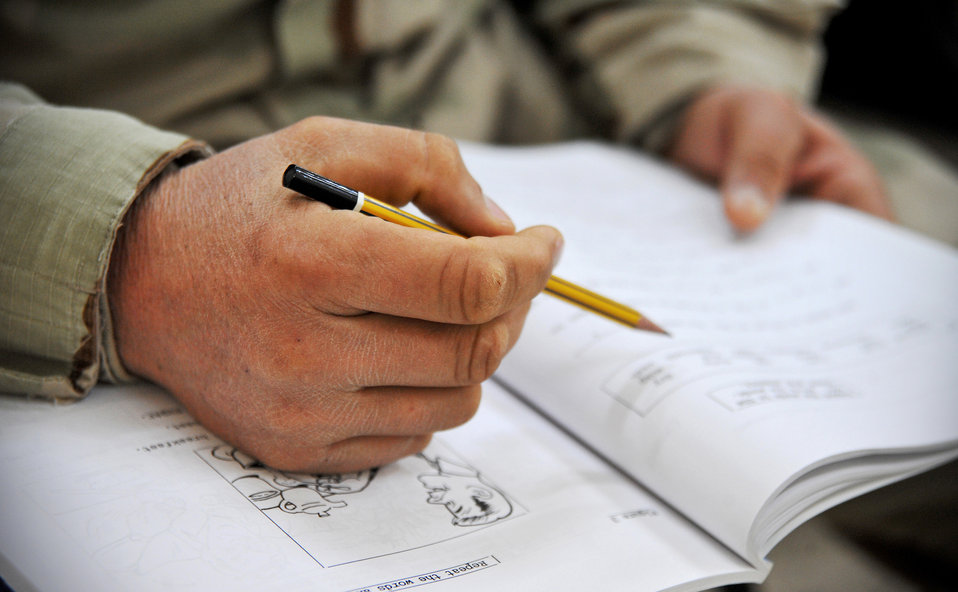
Iraqi Air Force Core Values

An Iraqi air force airman fills in the blanks of a test booklet during an English language class at the Iraqi Air Force Training School Dec. 13, 2010, in Taji, Iraq. The English language training is based on the Defense Language Institutes' program for teaching the English language.